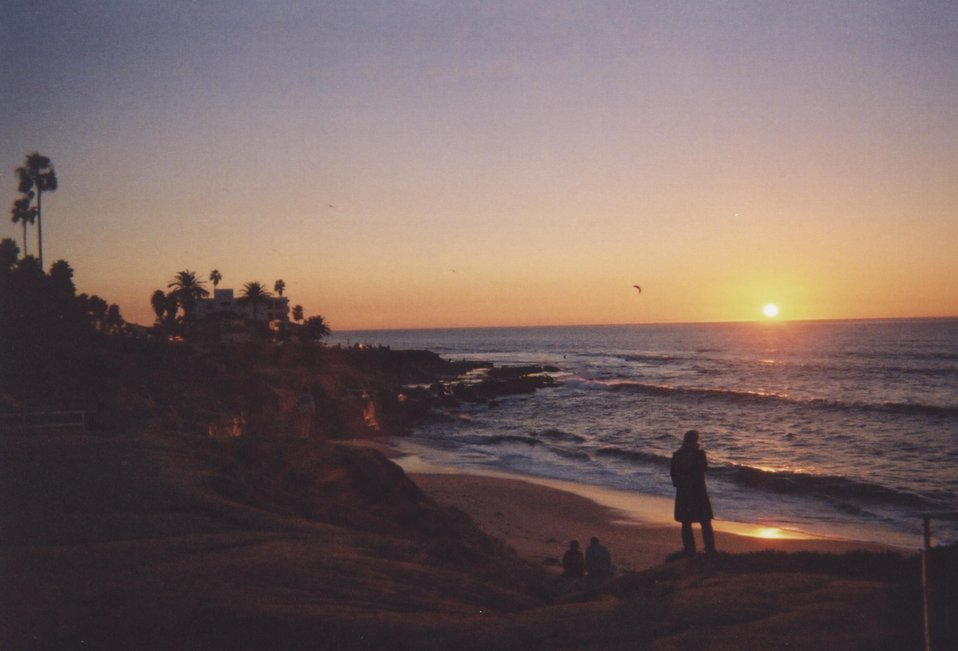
La Jolla Photo: G Larson Category:Images of San Diego